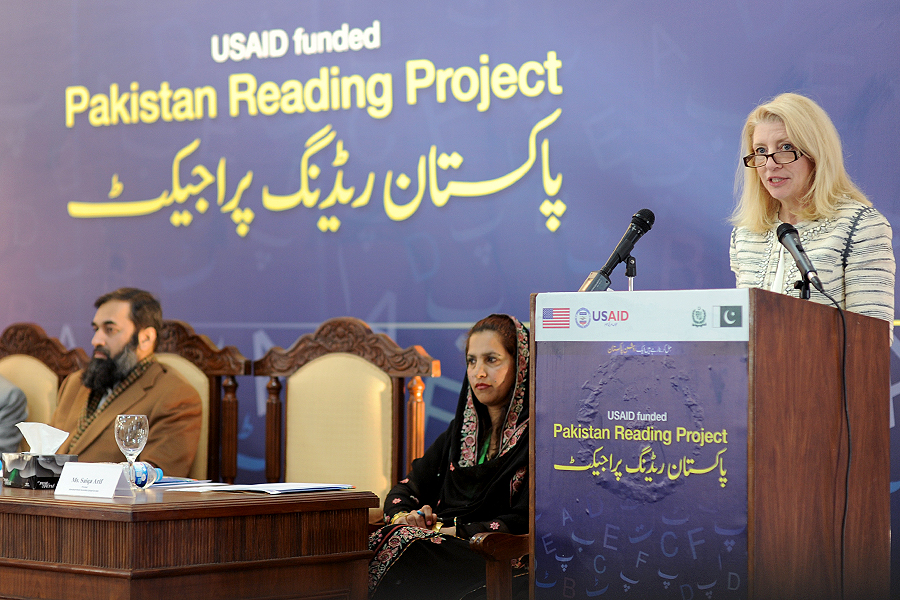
United States and Pakistan Launch the Pakistan Reading Project